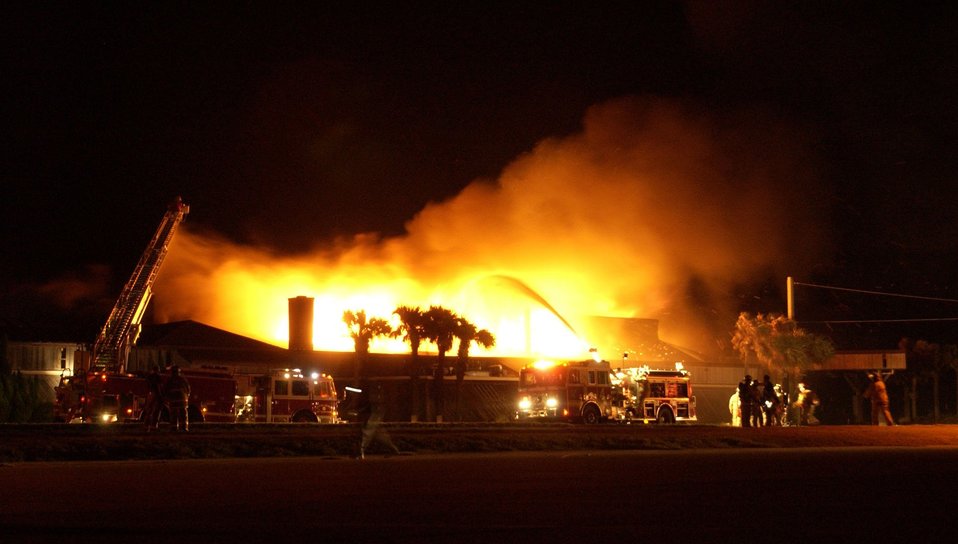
Fire destroys Patrick officers club

PATRICK AIR FORCE BASE, Fla. -- Firefighters battle flames at the officers club here Jan. 31. Scores of military and local community firefighters joined in the battle to save the building, but the blaze raged on into the wee hours of the morning and proved to be too strong to extinguish before it destroyed the inside of the structure.